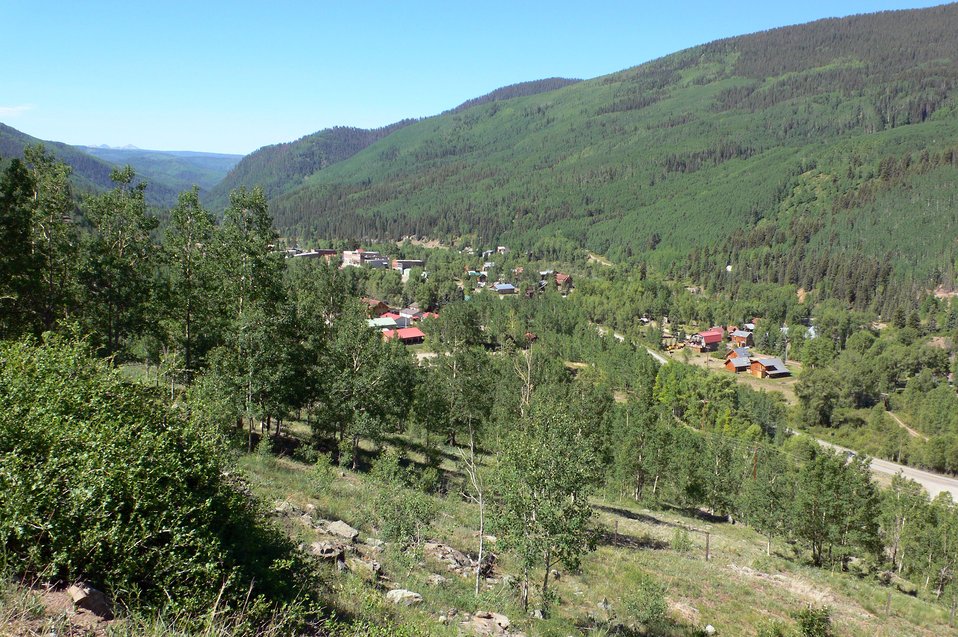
View of Rico, Colorado. A small mining town in southwest Colorado that has a small low-temperature geothermal resource.